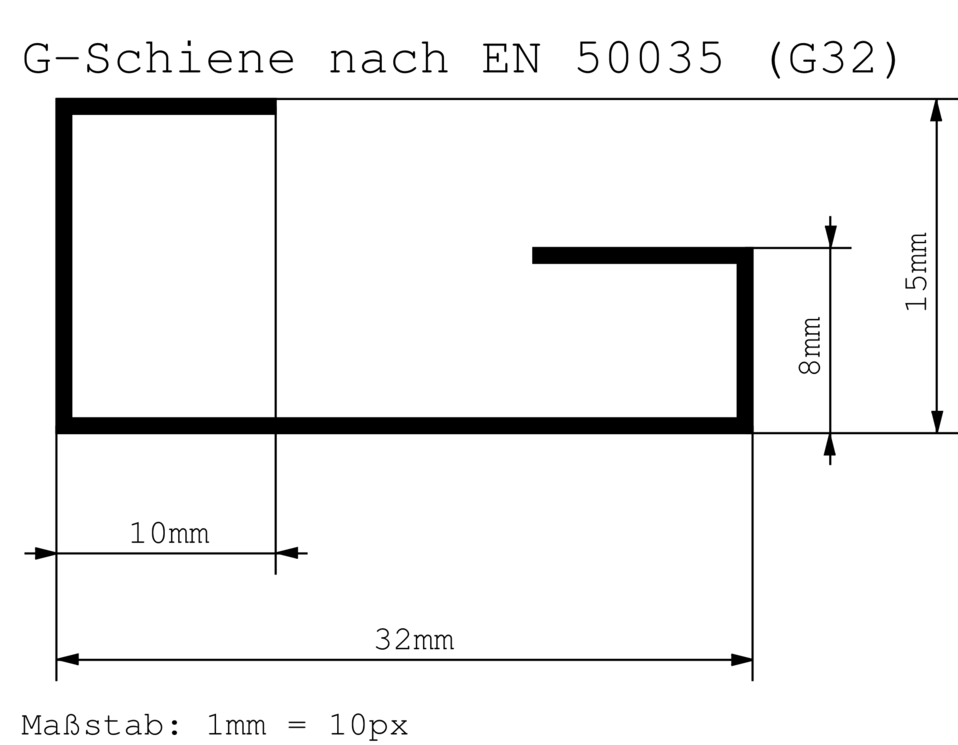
G-rail following EN 50035 (G32), German version. Deutsch: G-Schiene nach EN 50035 (G32), Deutsche Version.